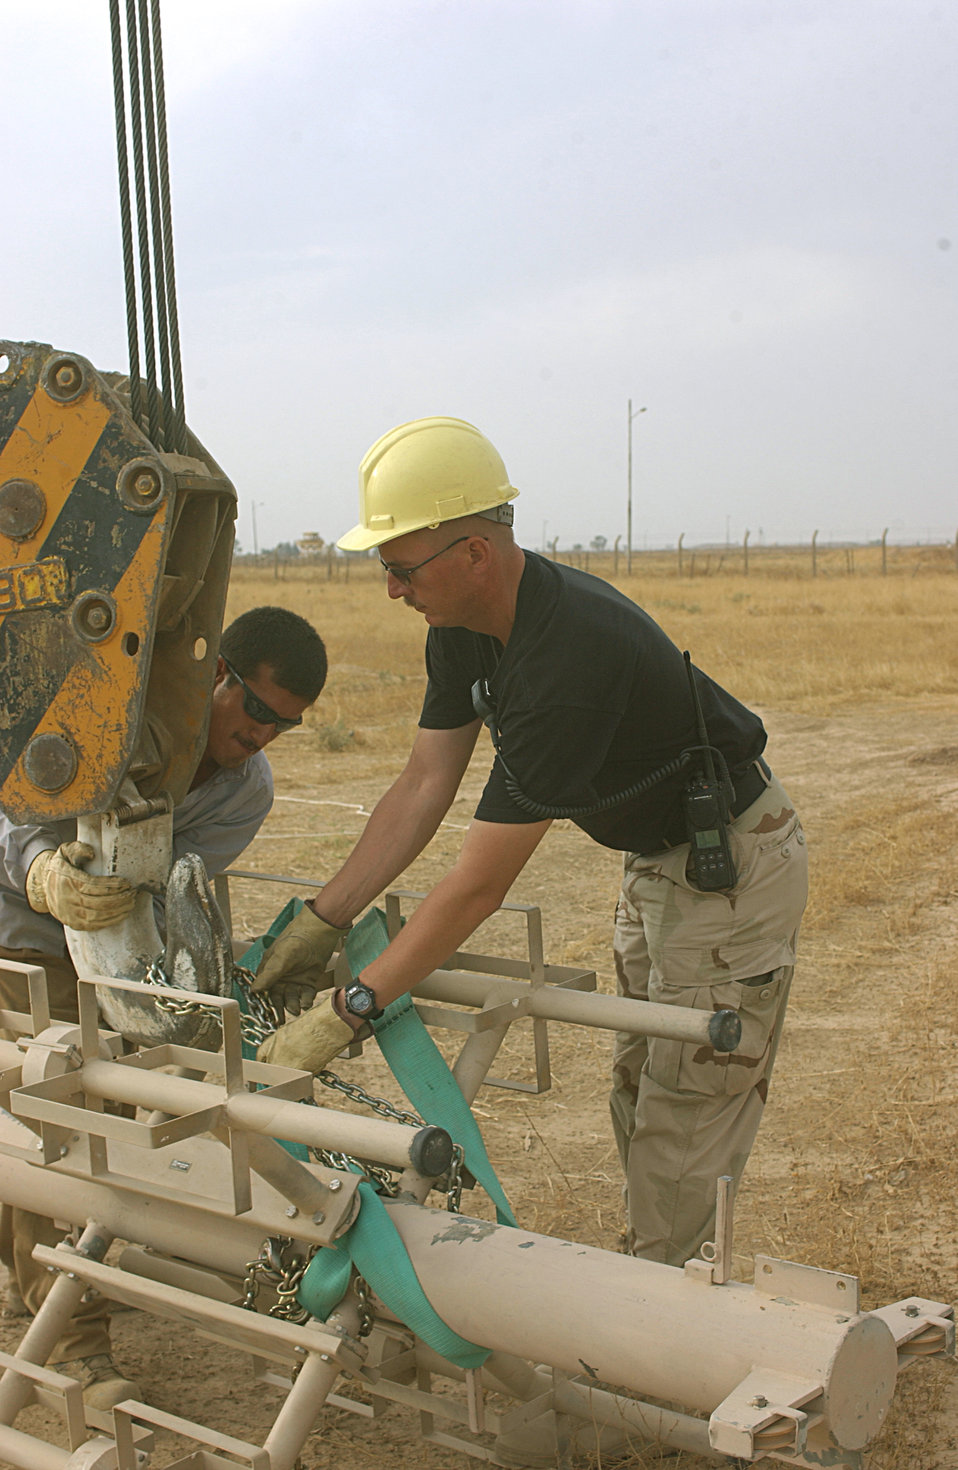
Crane Help

KIRKUK AIR BASE, Iraq -- Master Sgt. Scott Bickford and a local contractor, disconnect a crane used to lower an Iraqi radio tower here, Oct. 14, 2003. The tower is being reutilized and relocated to improve the land mobile radio and AFN FM transmitter reception. Bickford is assigned to the 506th Expeditionary Communications Squadron.